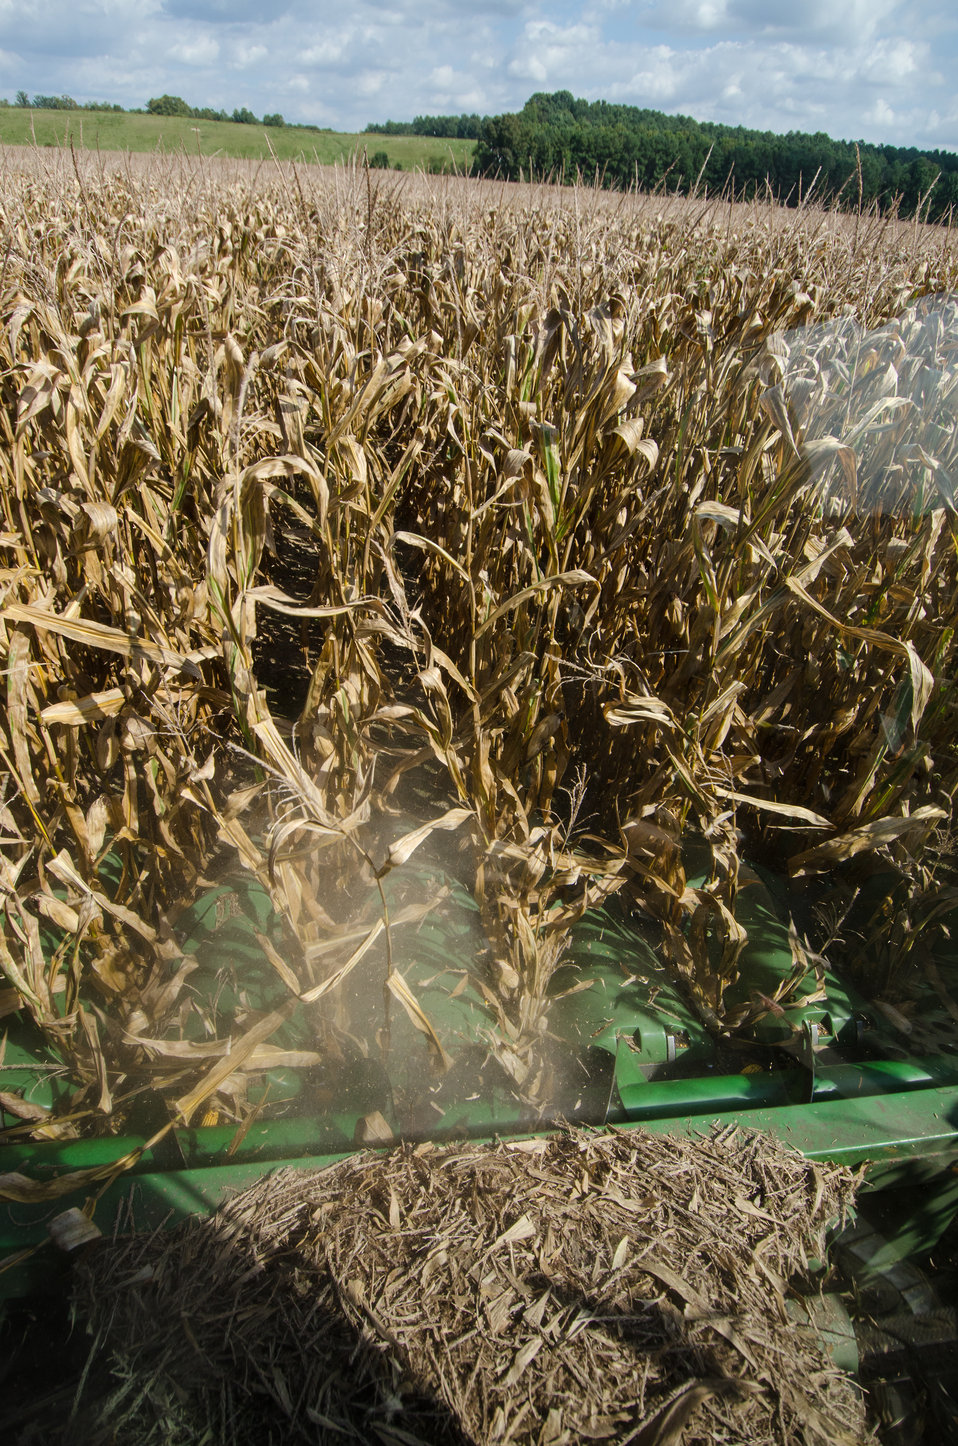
The view from the cab of a corn harvester, driven by John N. Mills, Jr., as he follows a GPS guided course through his fields of feed corn, during the Friday, Sept. 20, 2013, harvest at the John N. Mills & Sons farm; a family owned business located in the Hanover and King William Counties Virginia, on Friday, Sept. 20, 2013. Pleasant Level Farm was the original farm from a Land Grant from King George III of England to Nicholas Mills in 1725. The original acreage has never left the Mills family name and continues to be farmed by the family.
Now the farm covers 5,744 acres that produce corn, wheat, soybeans, barley, hay, timber, and pastures a large herd of beef cattle. They have been using conservation and stewardship practices since the 1960s. Some of the efficient practices include no-till planting and cover crops to reduce soil erosion and prevent the leaching of nutrients into ground water, as well as livestock stream exclusion. The farm has several conservation easements that aids in the preservation and restoration of wetlands and waterways. For information about the U.S. Department of Agriculture (USDA), please go to www.usda.gov.